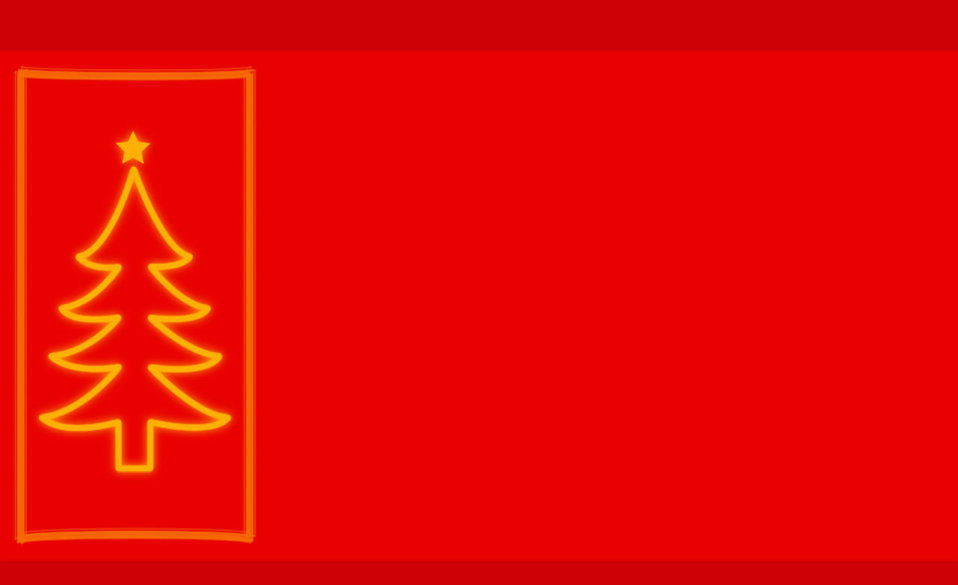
Christmas tree

Illustration of a christmas tree.